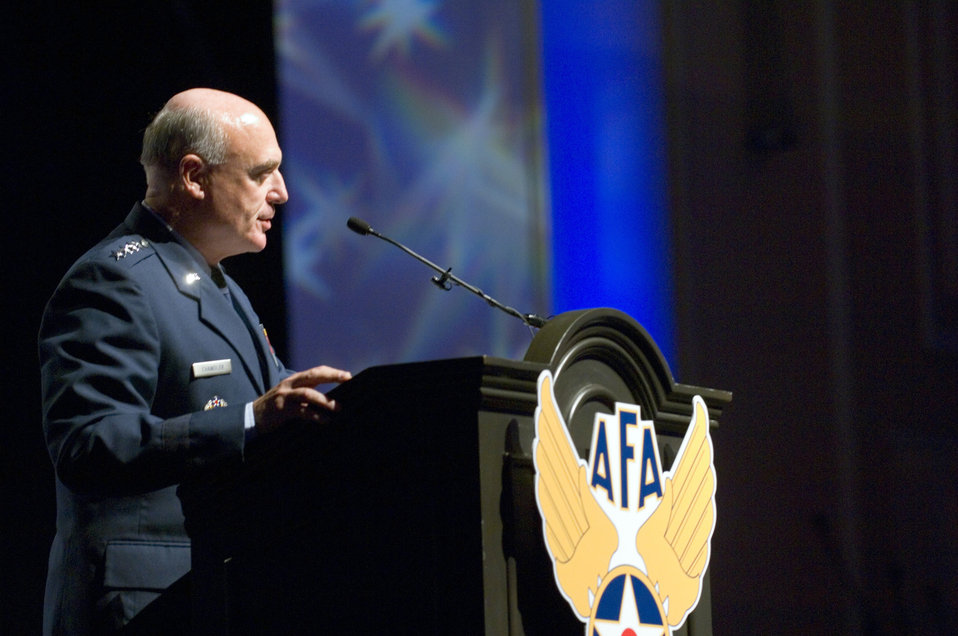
Air Force officials recognize 12 Outstanding Airmen of Year

Vice Chief of Staff Gen. Carrol H.